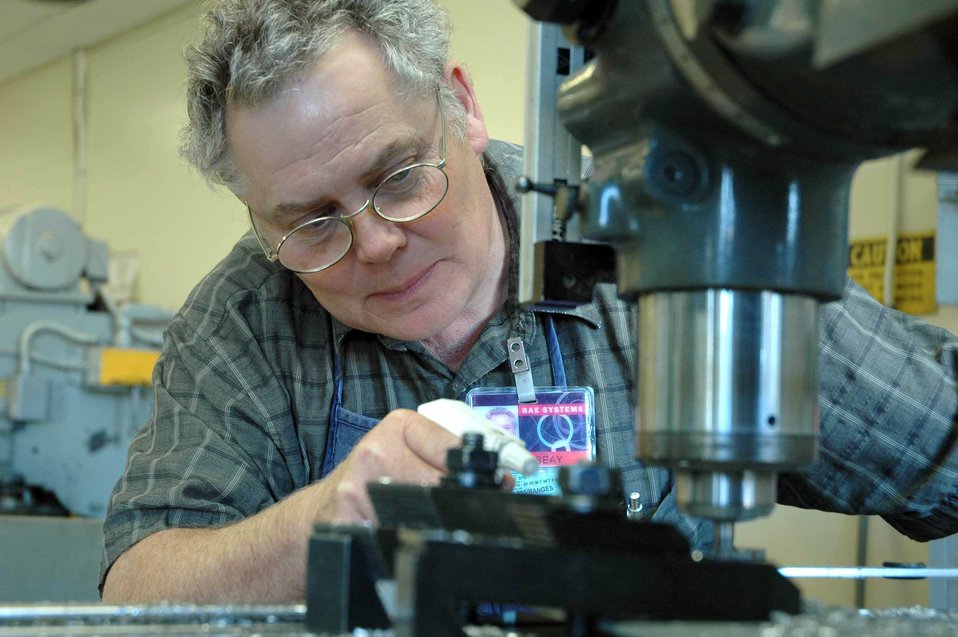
Small office comes up big

EGLIN AIR FORCE BASE, Fla. (AFPN) -- Mark Seay uses a vertical milling machine to make a piece of equipment for a munitions materiel handling equipment focal point project. They support the Air Force armament and munitions community with the development of munitions support equipment, designing and fabricating tools to make life on the flightline easier for munitions Airmen. Mr. Seay is with the 46th Test Wing Fabrication and Installation team.